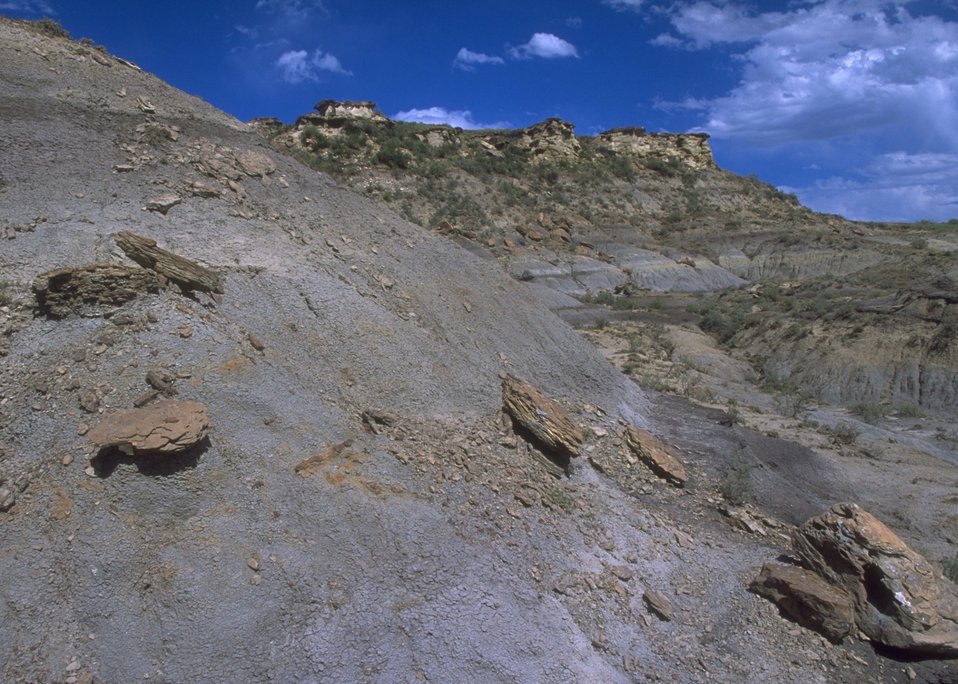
View of formation where fossils are found in Lance Creek Fossil Area, Newcastle Field Office.